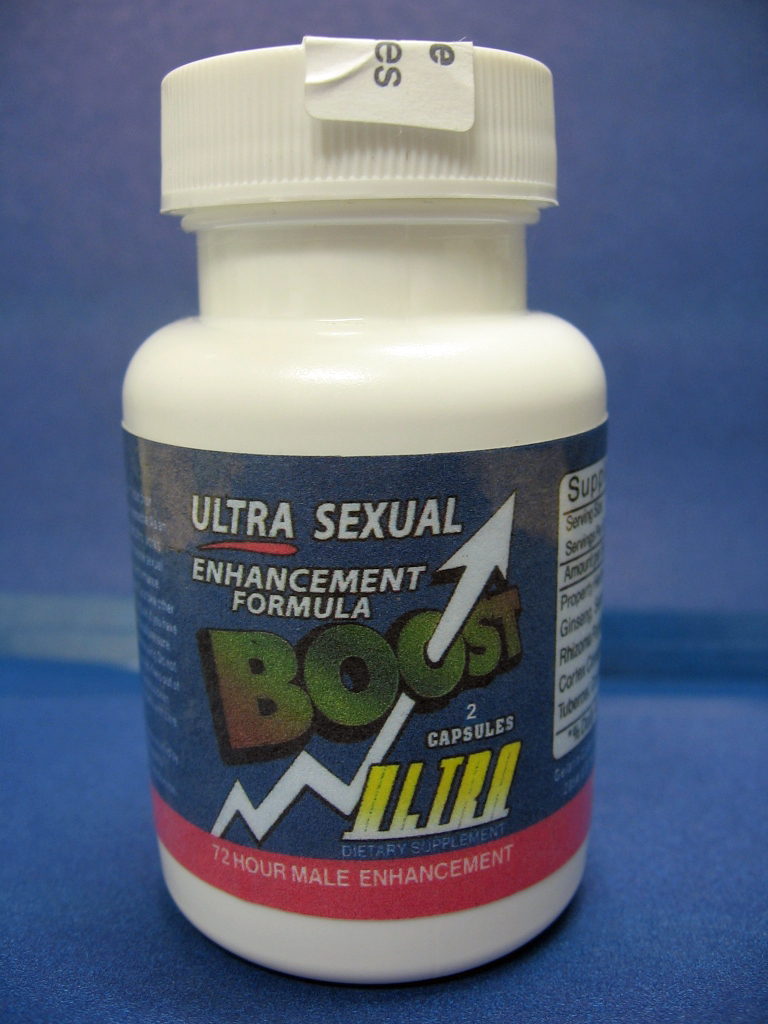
Boost

May 16, 2012 - The FDA is advising consumers not to purchase or use 'Boost,' a product promoted and sold for sexual enhancement. The product was found to contain undeclared sildenafil. For more information, go to www.fda.gov/Drugs/ResourcesForYou/Consumers/BuyingUsingMe...

And read this Consumer Update: Beware of Fraudulent ‘Dietary Supplements’